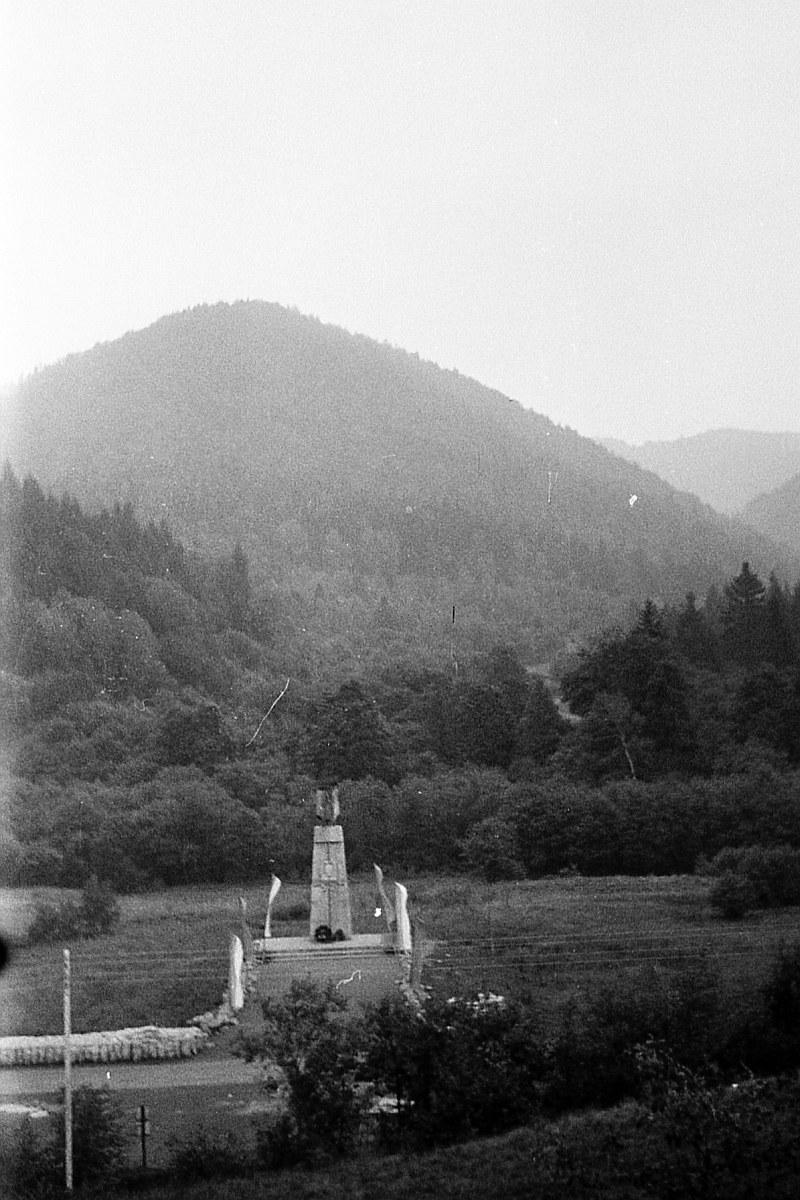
Polski: Pomnik Świerczewskiego, połowa lat 60. XX w.